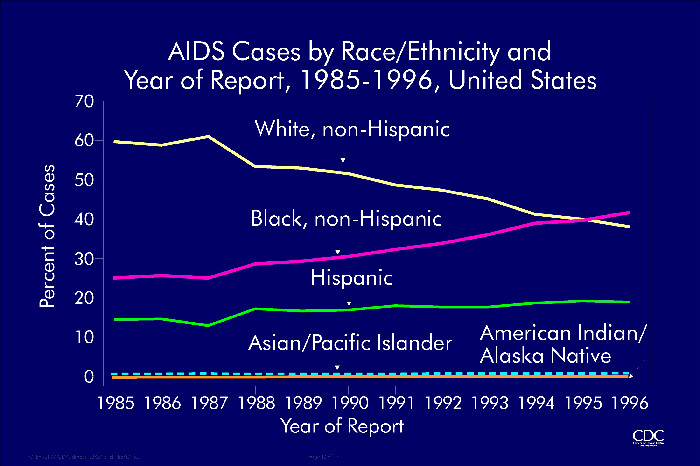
AIDS Cases by Race/Ethnicity and Year of Report 1985-1996, United States